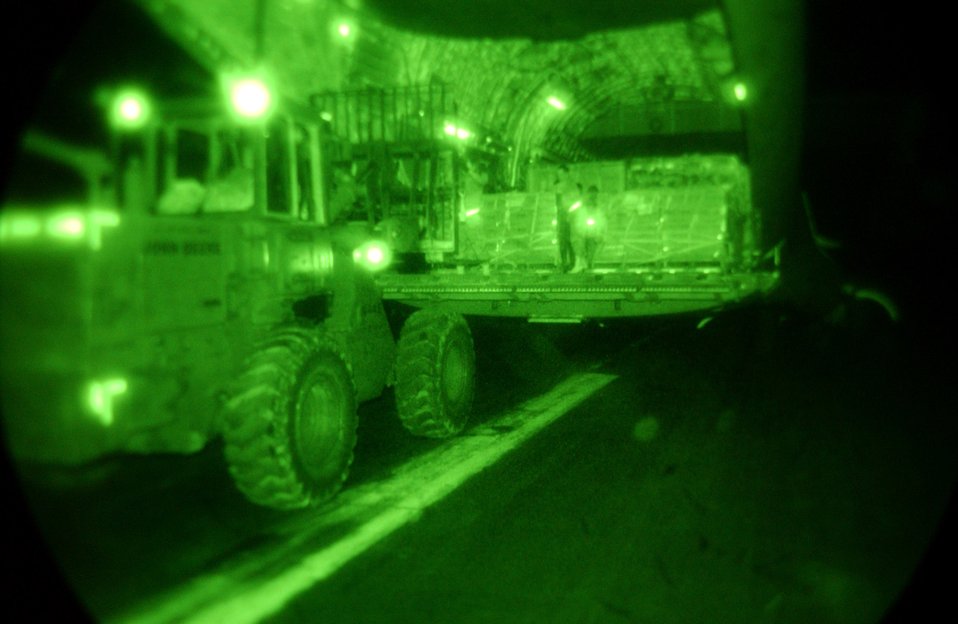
Pakistan earthquake relief

ISLAMABAD, Pakistan -- Airmen unload cargo in support of the Pakistan earthquake relief effort here Oct. 11. The Air Force is delivering disaster relief supplies and services as part of a multinational effort to provide aid and support to Pakistan and parts of India and Afghanistan following a devastating earthquake.